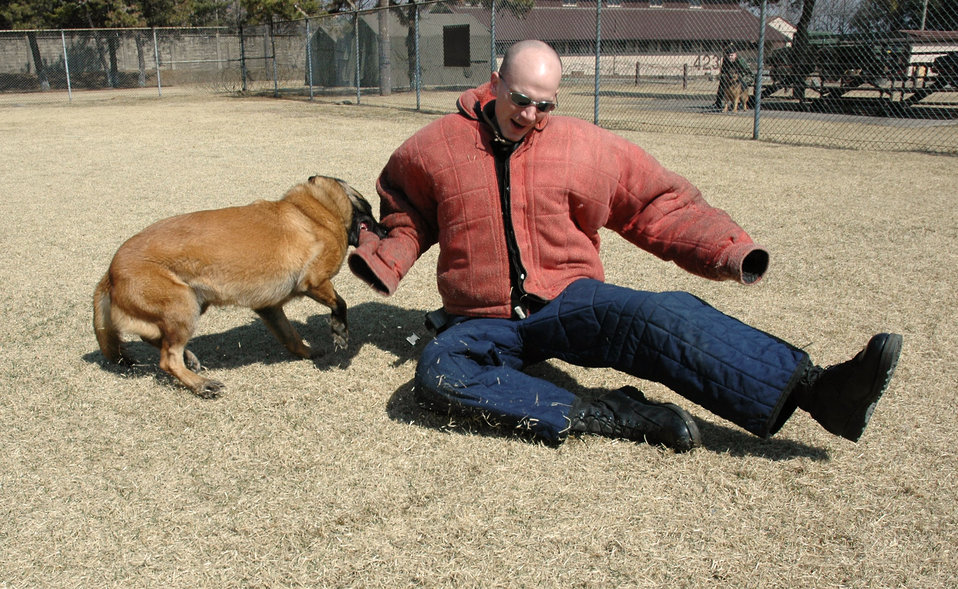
Military dogs dig into security

OSAN AIR BASE, South Korea -- Staff Sgt. Keith Kitchin is taken down by his dog, Elsa, during a criminal chase exercise here. Sergeant Kitchin is wearing a special jacket designed to keep him from being harmed by the dog's bite. Sergeant Kitchin is a 51st Security Forces Squadron military working dog handler. The dogs are highly trained to obey specific commands and for multiple tasks. The dogs are trained to bite and hold because it mitigates injuries to the victim. The military working dog kennel here is the largest operational kennel in the Air Force.